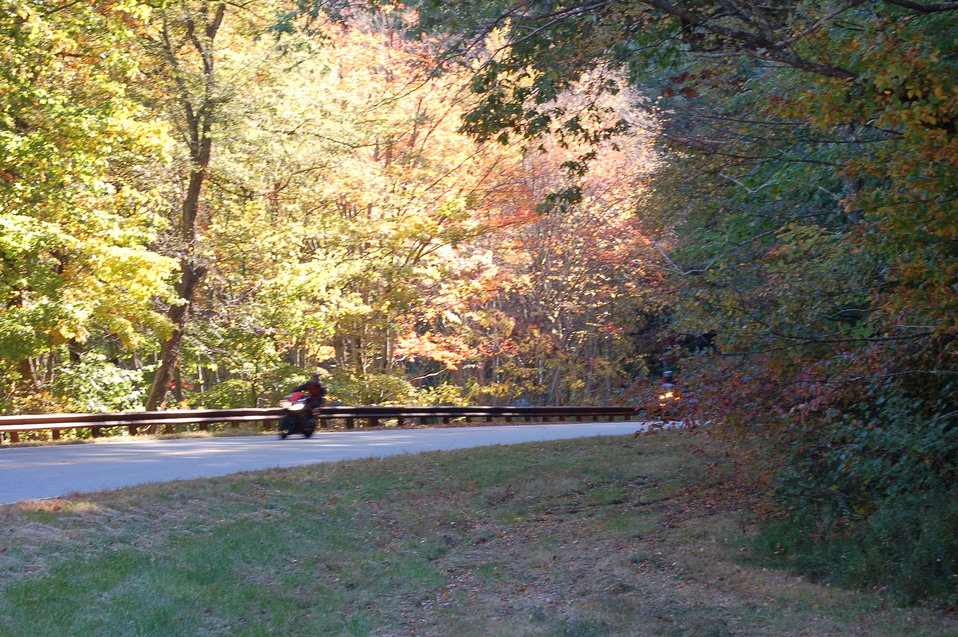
The 43-mile Cherohala Skyway on the Cherokee and Nantahala National Forests in North Carolina. The U.S. Forest Service (FS) has a Forest Service 2012 Fall Colors Website and a toll-free Fall Colors Hotline at 1-800-354-4595 that will help visitors plan their trip to catch the colors at their peaks.USDA photo by J. Knowlton.